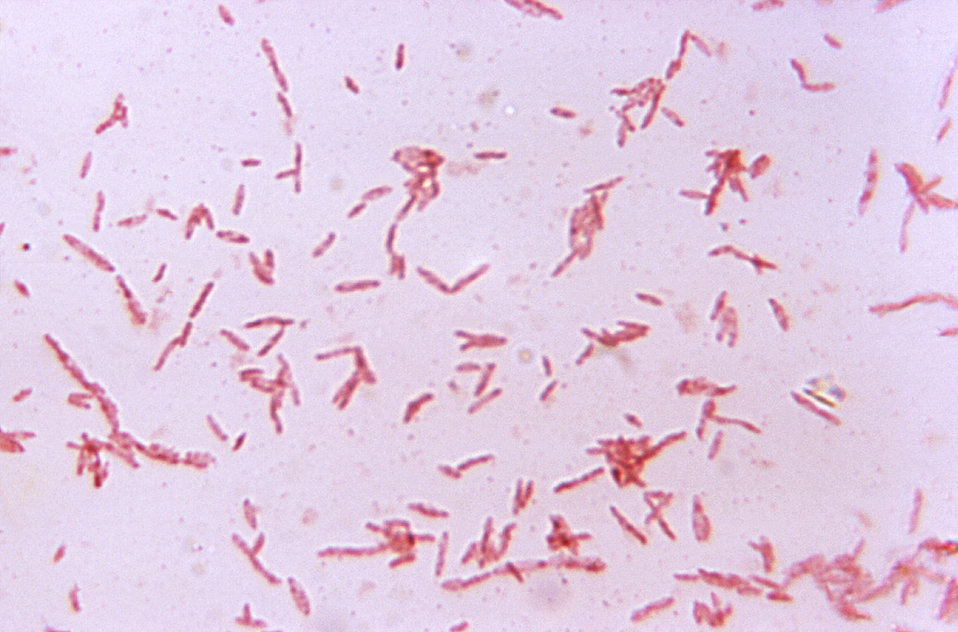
This micrograph depicts Bacteroides clostridiforme subsp. girans bacteria that had been cultured in thioglycollate broth medium for 48 hours.